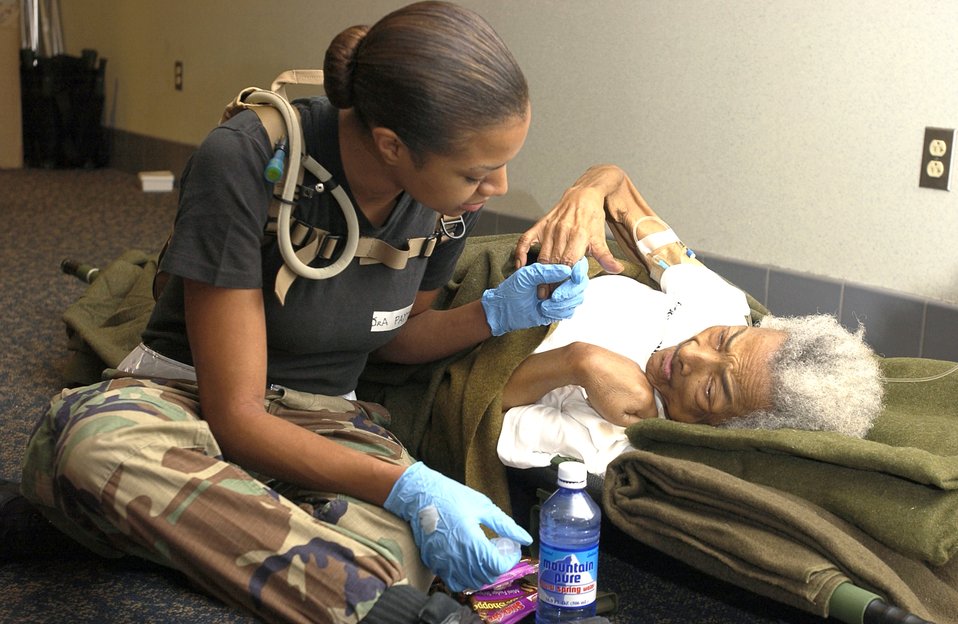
Caring compassion

LOUIS ARMSTRONG NEW ORLEANS INTERNATIONAL AIRPORT, La. -- Senior Airman Portia Payton talks to hurricane evacuee Betty Porter here Sept. 4. Airman Payton sat with Ms. Porter for almost four hours while talking, feeding and offering her water before her aeromedical evacuation flight to Lake Charles, La. Airman Payton is a medical technician from the 59th Medical Wing at Lackland Air Force Base, Texas.